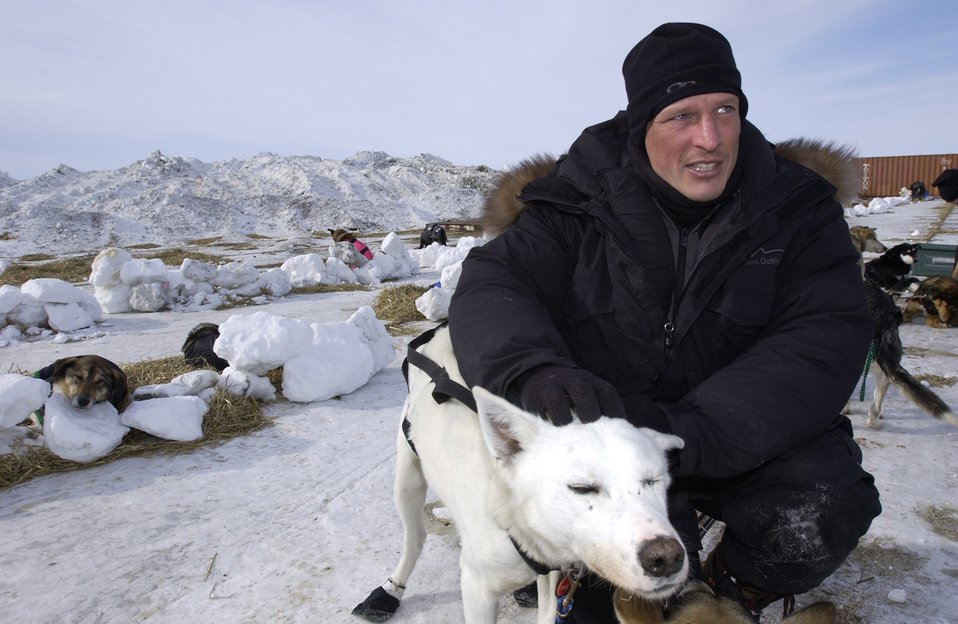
Air Force doctor finishes Iditarod with flourish

Maj. (Dr.) Thomas Knolmayer pets Waco after finishing the 2006 Iditarod Sled Dog Race Friday, March 17, 2006, in Nome, Alaska. Doctor Knolmayer finished the 1,150-mile race across Alaska in 11 days, 22 hours and 13 minutes, bettering his time from last year by 47 hours. Waco is a 10-year-old Alaskan Husky who just completed his seventh Iditarod. Doctor Knolmayer is chief of surgery at the 3rd Medical Group at Elmendorf Air Force Base, Alaska.